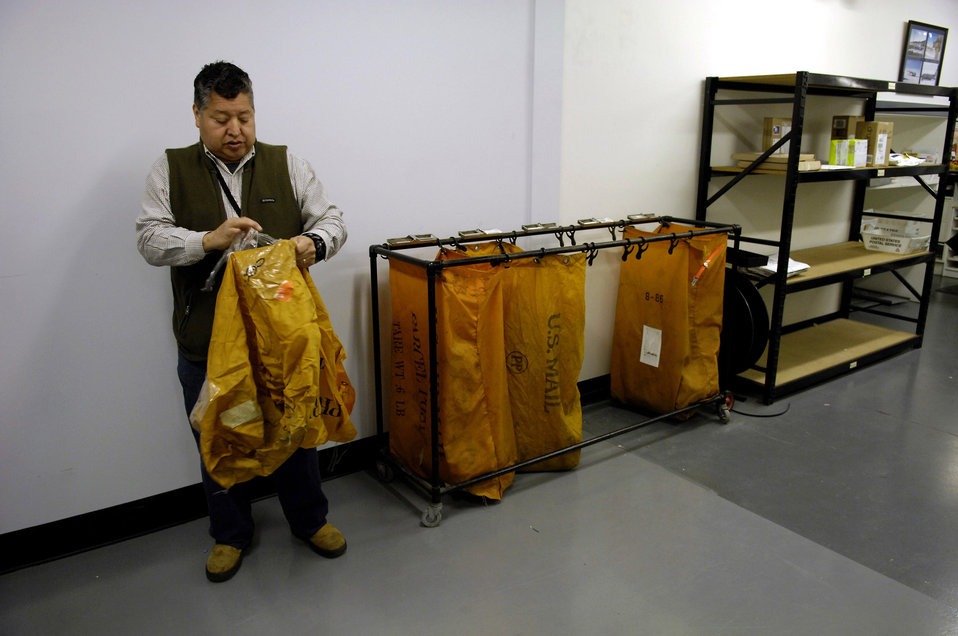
Neither snow nor deep freeze keep mail from Antarctica

Enrique Garza folds up a mailbag for Operation Deep Freeze members Aug. 23 at Christchurch, New Zealand. Members of Det. 4, Pacific Air Forces Air Postal Squadron process all mail coming in and out of Antarctica and can handle up to 240,000 pounds of mail during Operation Deep Freeze. Mr. Garza is a finance and postal clerk.